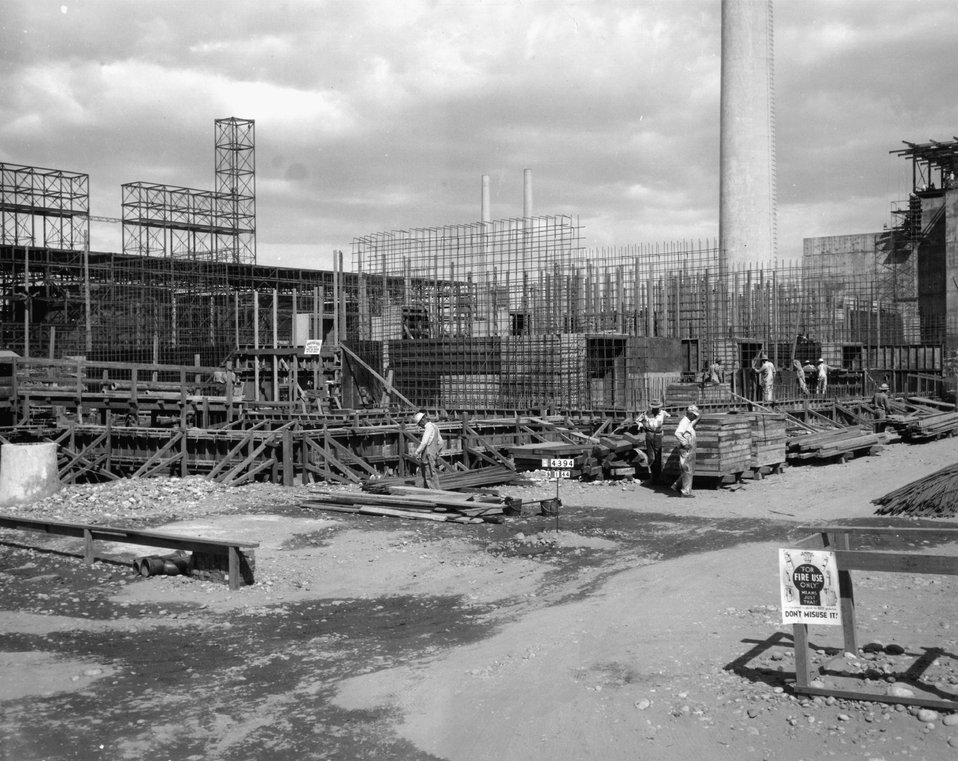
Photo taken during the construction days in one of the production areas at the Hanford Engineer Works. c. undated